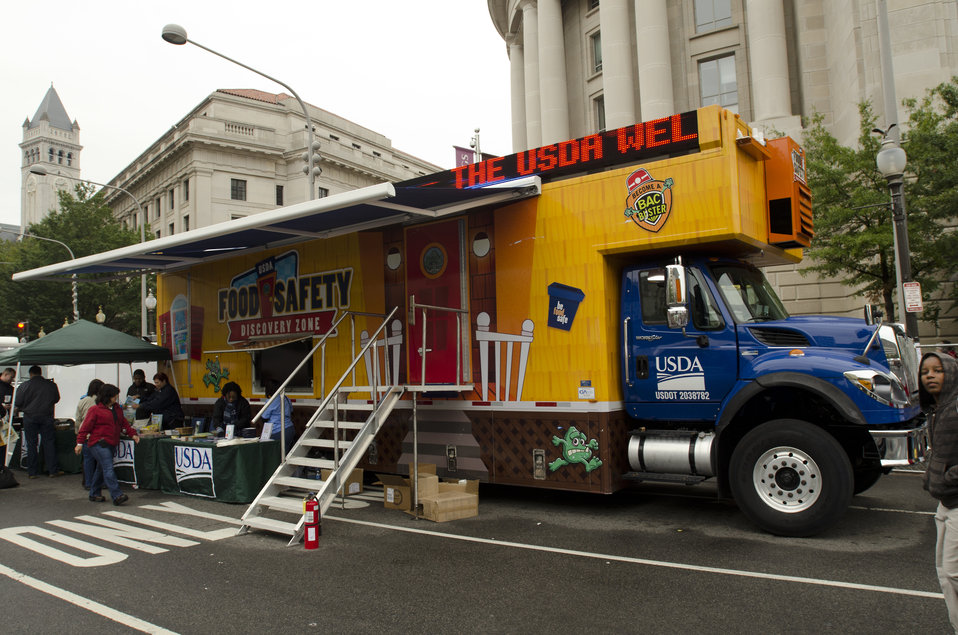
Agriculture’s mobile Discovery Zone is a hands-on vehicle that travels the nation educating children and parents about the four main principals of home food safety – clean, separate, cook and chill, at the Taste of D.C., event that highlights more than 70 eateries, 30 specialty beer providers, the United Service Organization (USO) Metropolitan Washington, and live bands. It is anticipated that more than 500,000 people will attend over the course of the three-day event, which extends from the White House to the Capitol, along Pennsylvania Ave. in Washington D.C. on Sunday, October 7, 2012. Agriculture Food Safety and Inspection Service specialists present talks and cooking demonstrations.